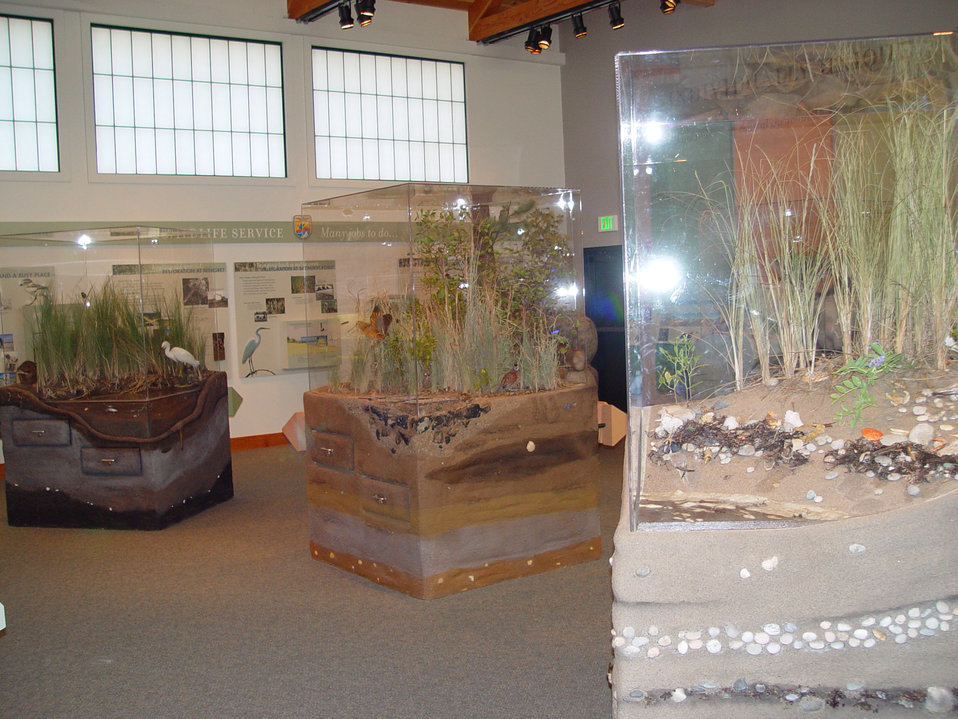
Kettle Pond Visitor Center in Charlestown, RI.